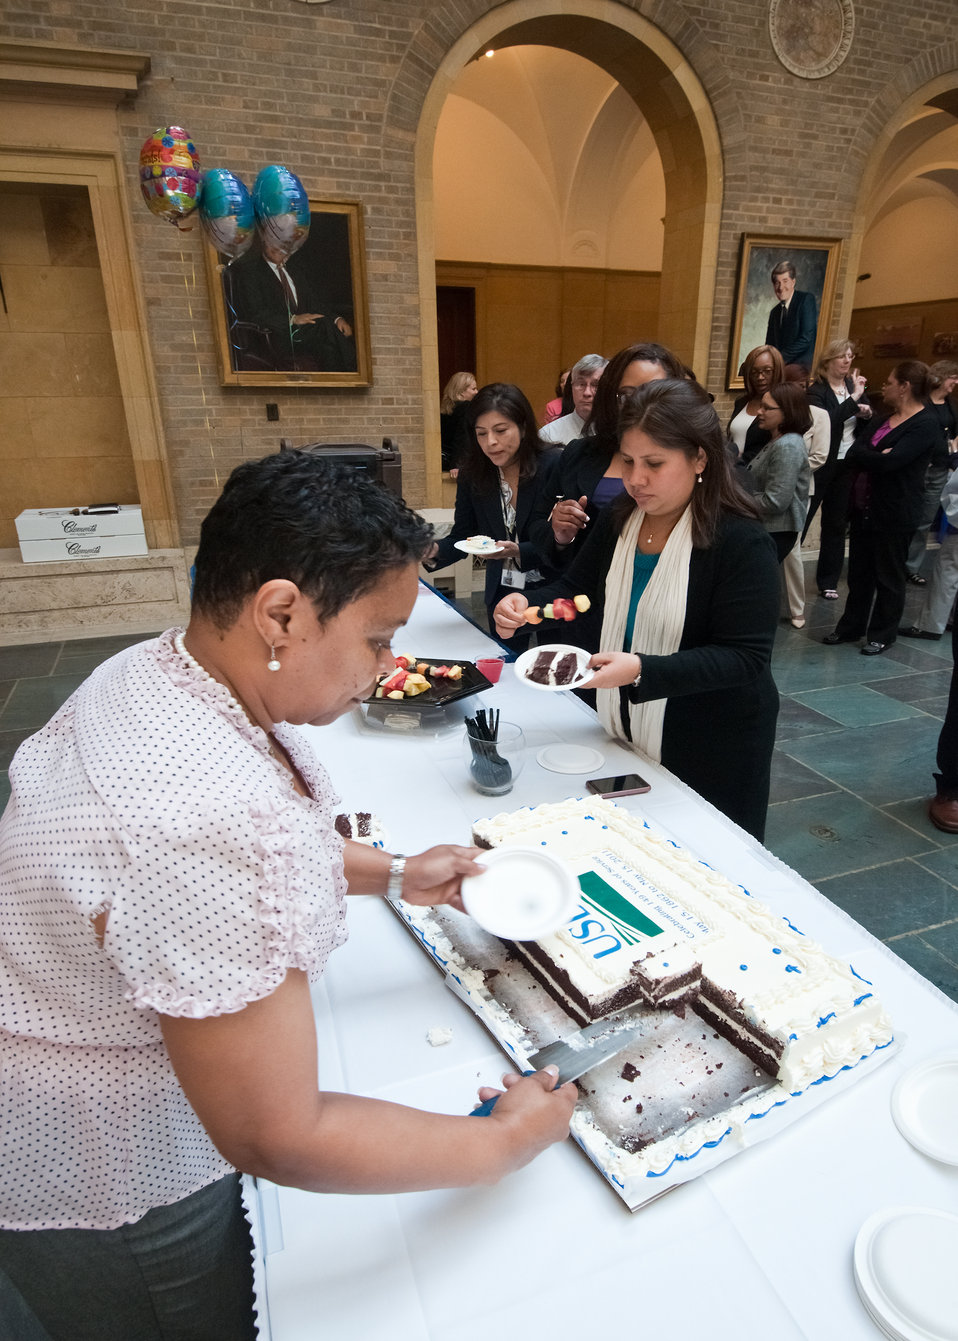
Wanda Swann, Office of the Chief Information Officer serves Kathya Caballero, Foreign Agriculture Service birthday cake during the kick-off for the United States Department of Agriculture’s 150th Birthday in Washington, DC, Tuesday, May 17, 2011. During the coming year the United States Department of Agriculture will hold special events across the United States celebrating the birth of the agency formed by President Abraham Lincoln on May 15, 1862.